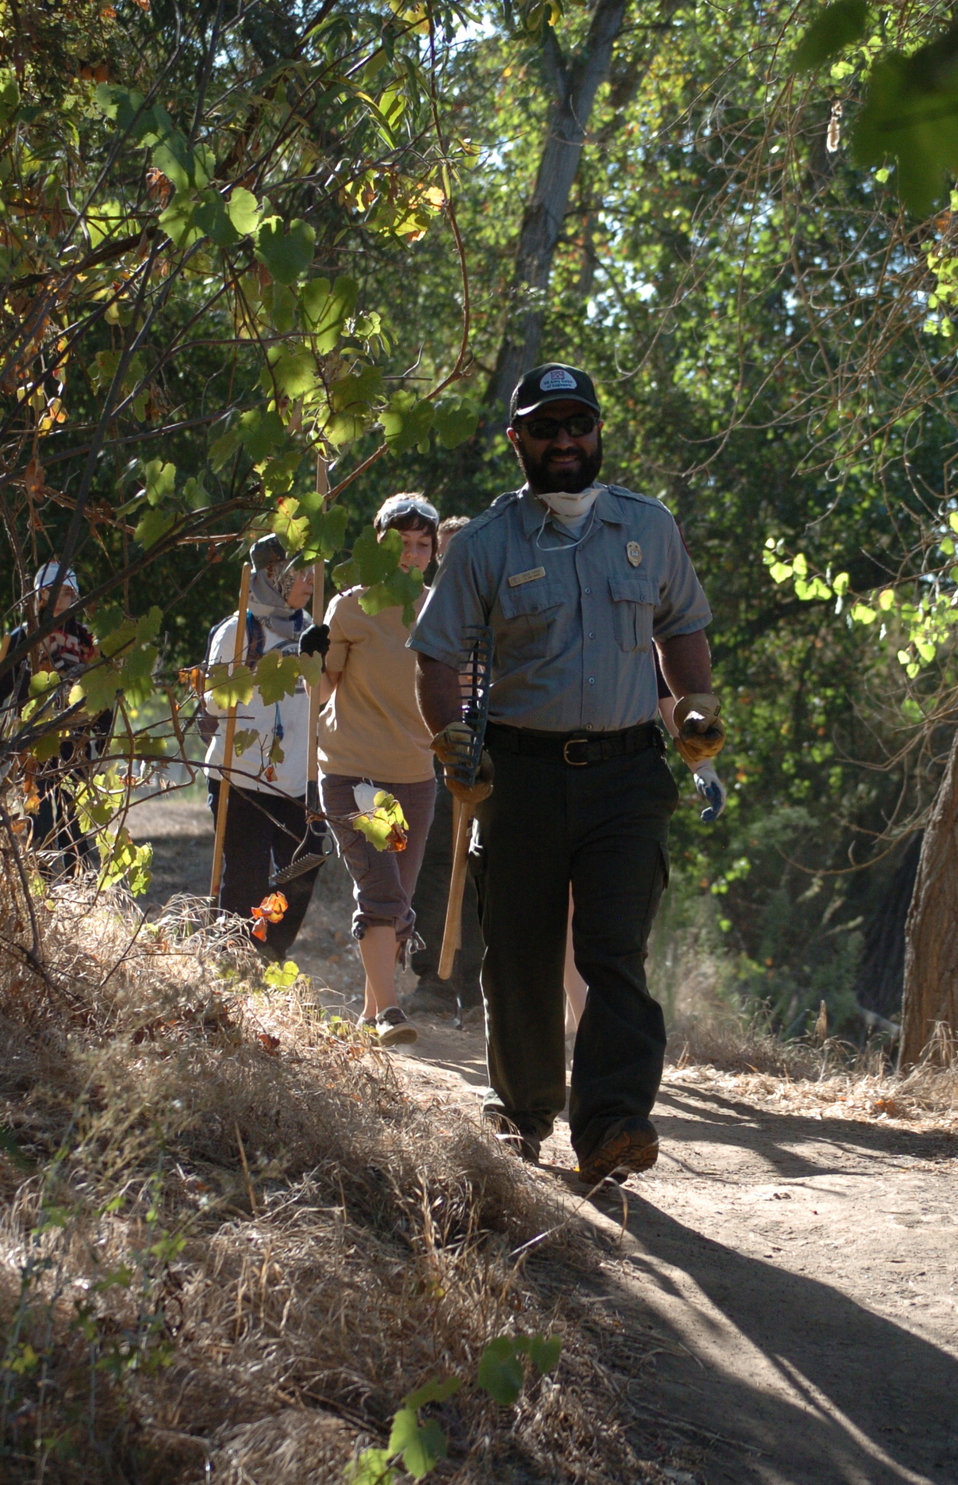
STANISLAUS RIVER PARKS, Calif. (Sept. 25, 2010) -- Jason Faridi (right), senior park ranger at Stanislaus River Parks, leads volunteers along a trail near the Stanislaus River Sept. 25. More than a dozen volunteers joined Faridi and park staff to lay out wood chips and clear trails of overgrowth at the park as part of National Public Lands Day. “An event like this, what it means for us, is that people actually care about their parks that they are recreating in,” said Faridi.